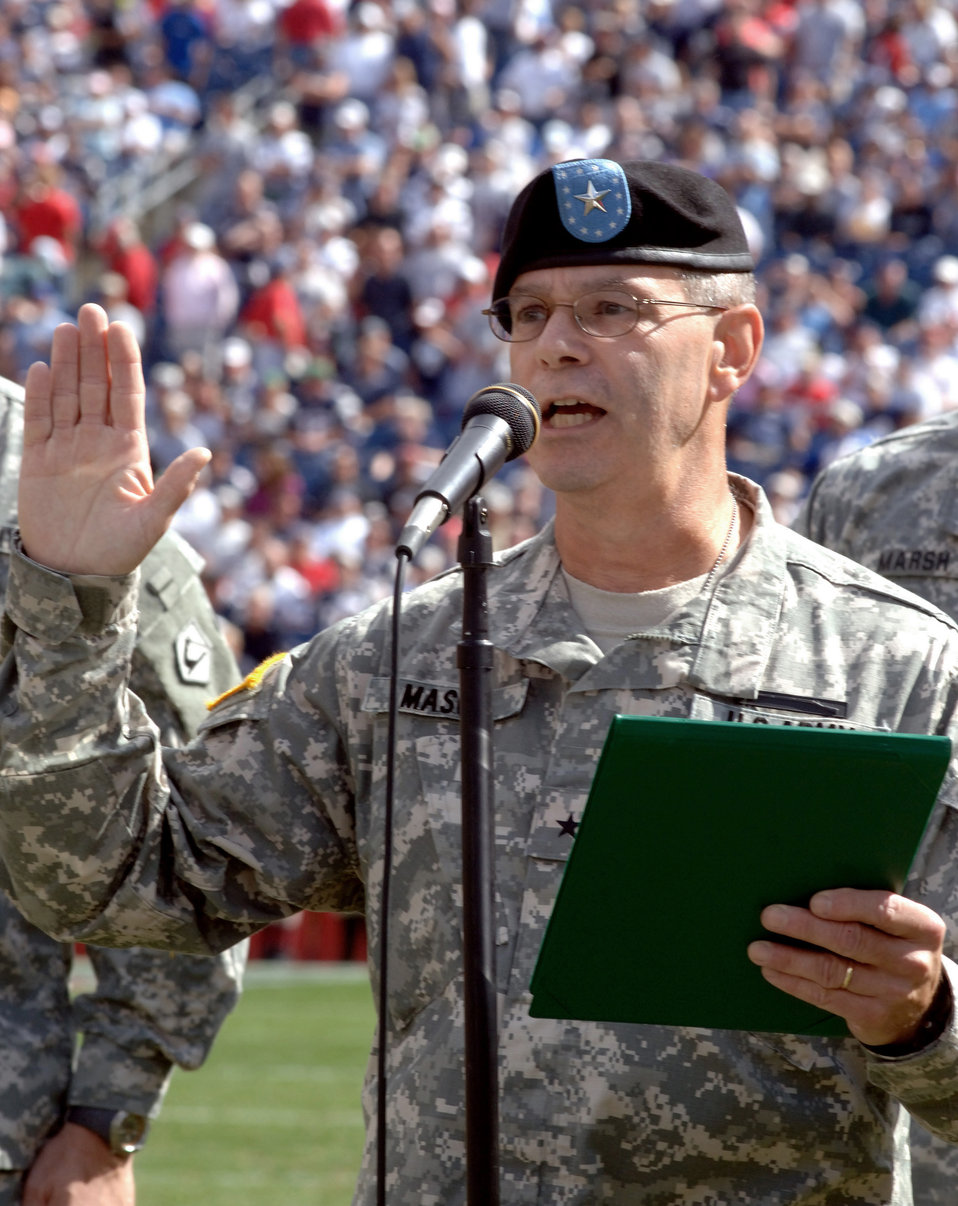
Patriots Football Game Enlistment

Brigadier General Oliver Mason enlists hundreds into the Army National Guard during halftime of the New England Patriots versus Buffalo Bills game at Gillette Stadium 10 Sep. Before the game, a B-2 Stealth Bomber from Whiteman Air Force Base, Mo., did a flyover that erupted the crowd. New England went on to win the game played at Gillette Stadium, 19-17.